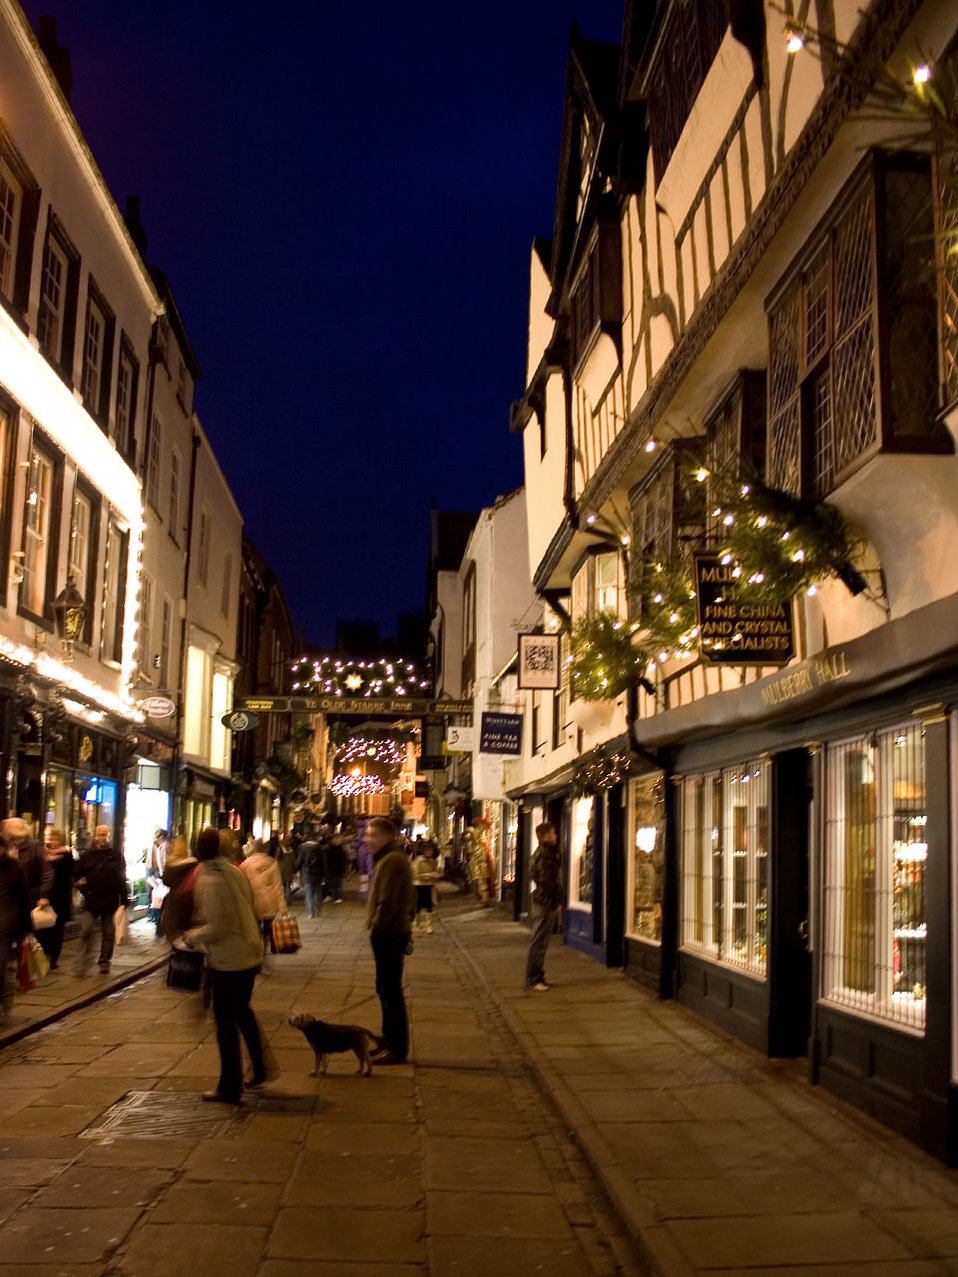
York at night at christmas time.